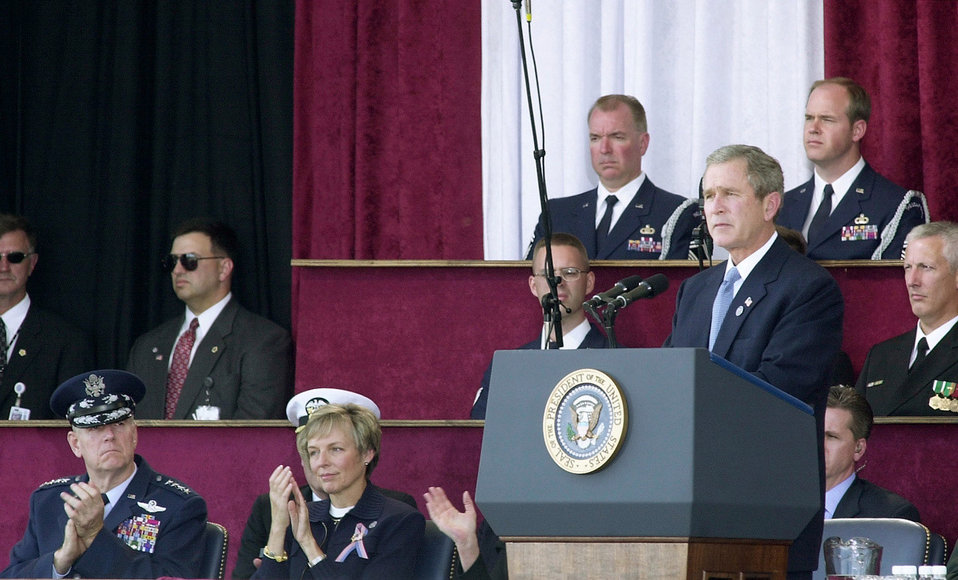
Keynote

WASHINGTON -- President George W. Bush provides the keynote address during the Pentagon memorial ceremony Oct. 11 as chairman of the Joint Chiefs of Staff. U.S. Air Force Gen. Richard B. Myers and other attendees applaud. More than 20,000 people attended the ceremony, held on the Pentagon Parade Ground to remember those killed in the Sept. 11 terrorist attack at the Pentagon.